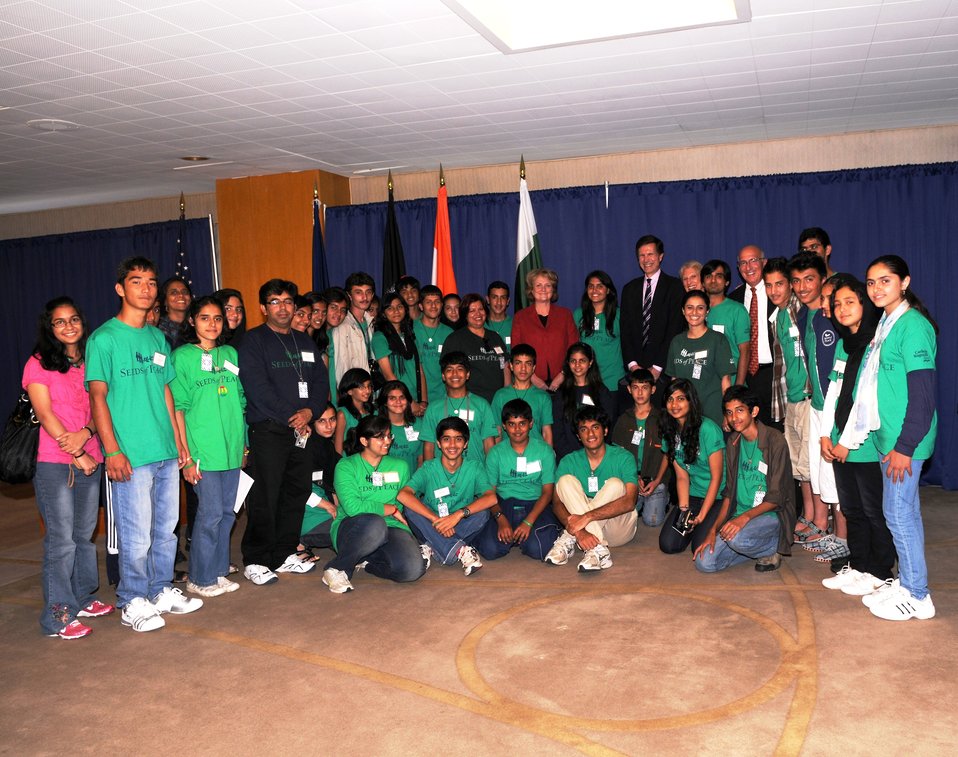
Under Secretary McHale and Assistant Secretary Blake With South Asian Seeds of Peace Participants

U.S. Under Secretary of State for Public Diplomacy and Public Affairs Judith McHale (center) and U.S. Assistant Secretary for South and Central Asian Affairs (center-right) pose for a photo with South Asian participants of the Seeds of Pace program at the U.S. Department of State in Washington, D.C., on July 14, 2010.